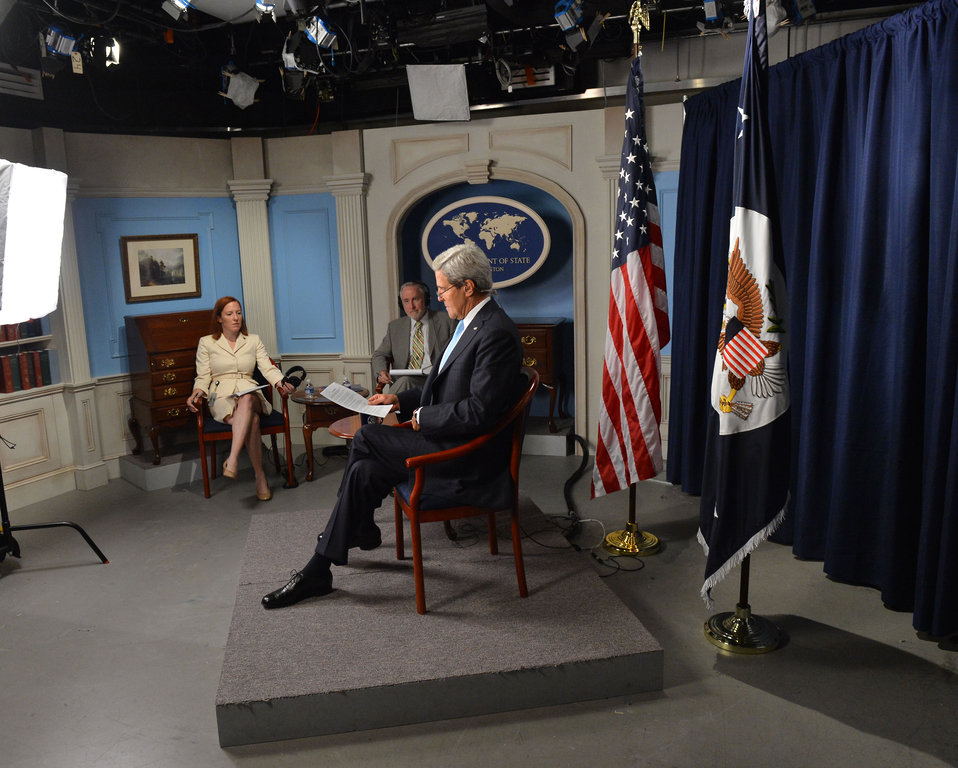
Secretary Kerry Prepares for his Google Hangout on Syria

U.S. Secretary of State John Kerry prepares for his Google Hangout with the New York Time's Nicholas Kristof and Syria Deeply's Lara Setrakian at the U.S. Department of State in Washington, DC on September 10, 2013.